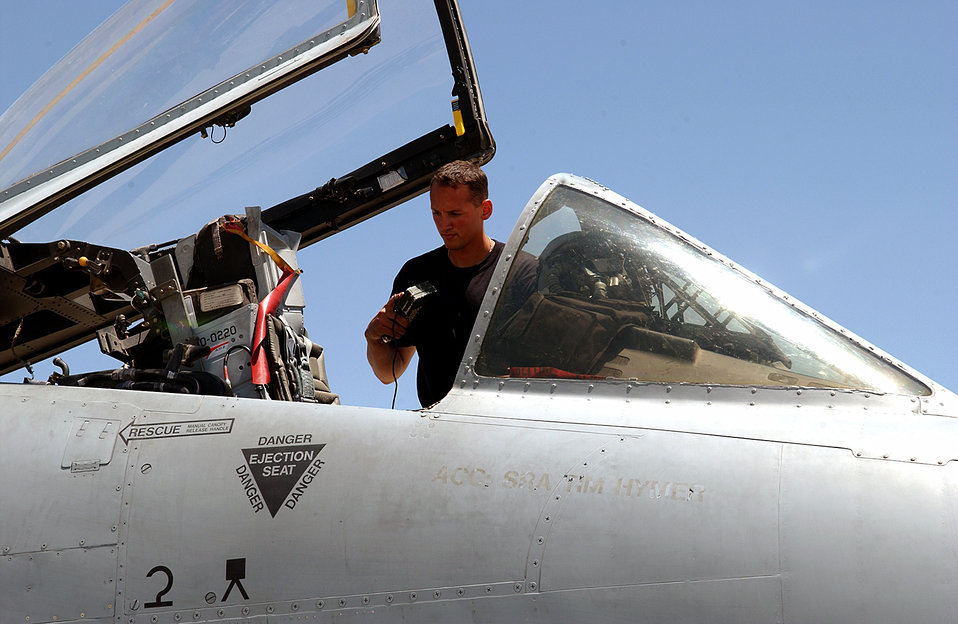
Feeding the Warthog

BAGRAM AIR BASE, Afghanistan -- Airman 1st Class Jesus Rodriguez prepares an A-10 Thunderbolt II for takeoff, just before a pilot gets into the aircraft. Airman Rodriguez is a 455th Expeditionary Aircraft Maintenance Squadron crew chief.